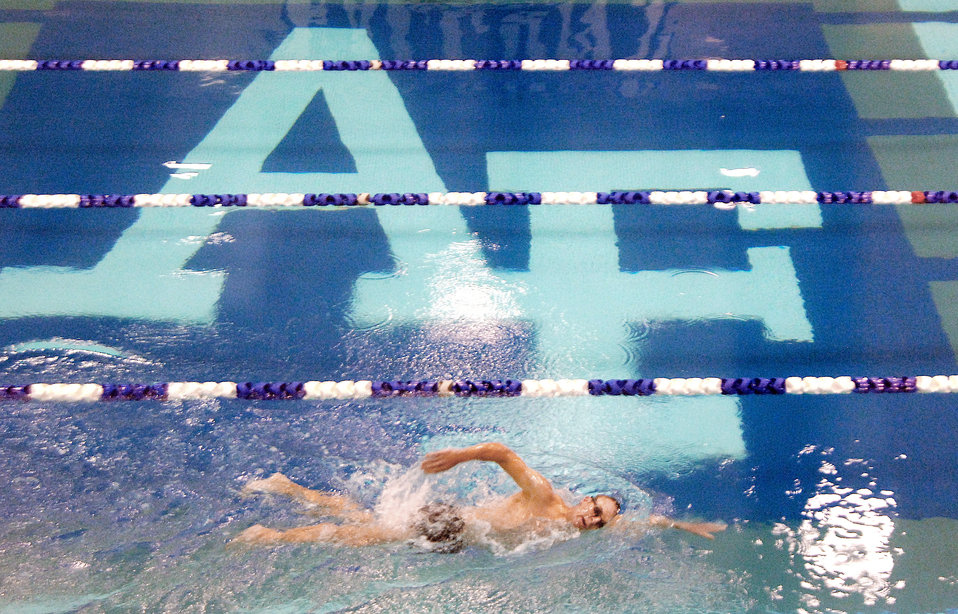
Academy officer picked for top triathlon

Maj. Scott Poteet, the adviser for Air Force Academy Cadet Squadron 02, trains for the 2010 Ironman Triathlon Oct. 4, 2010 at the Academy. Poteet's regimen includes more than three hours of training per day biking, swimming and running. The Ironman Triathlon takes place Oct. 9 in Kona, Hawaii.